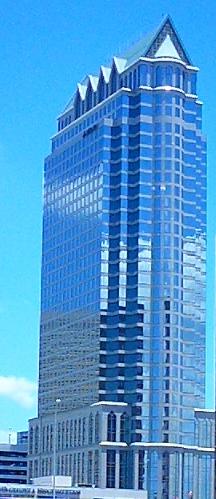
Cropped image of Tampa skyline to emphasize en:100 North Tampa